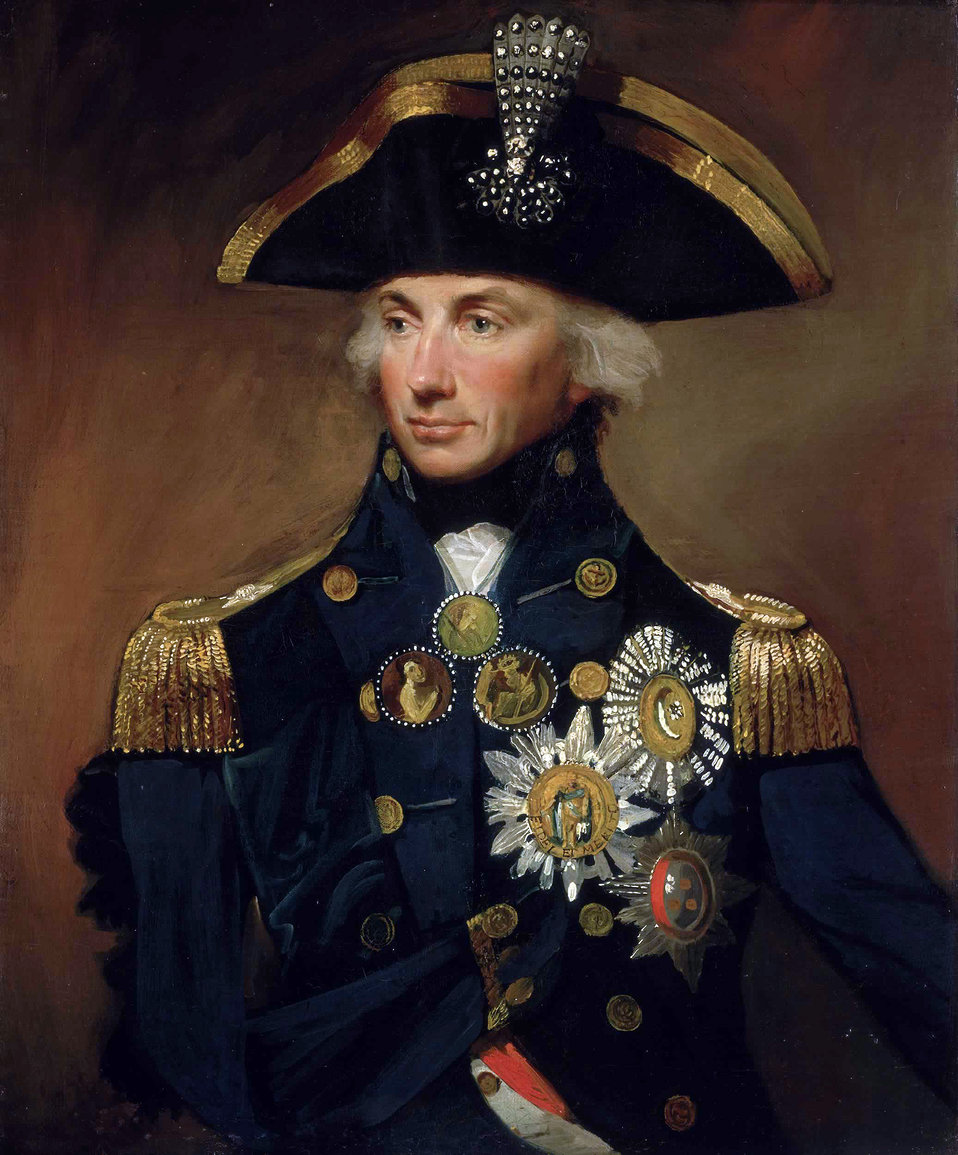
HoratioNelson1